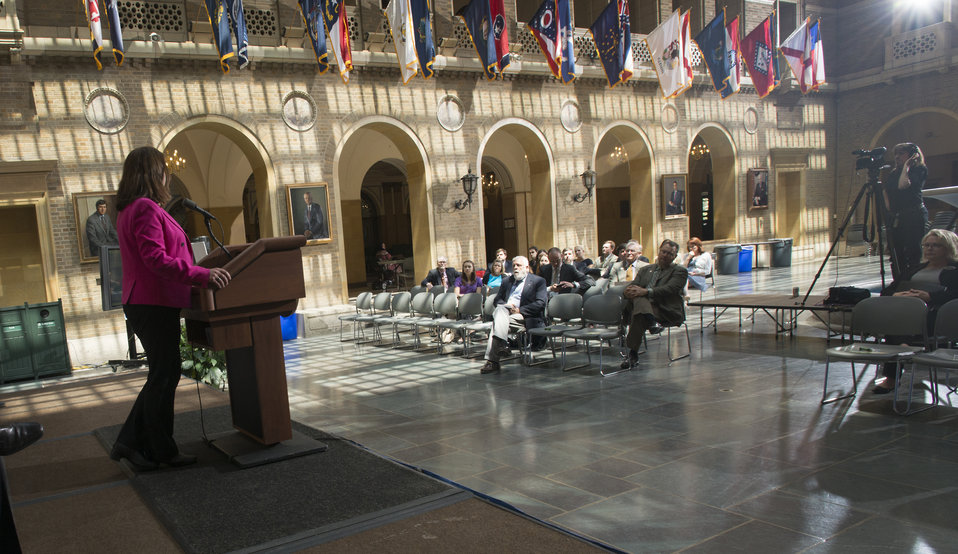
President and CEO of USA Rice Betsy Ward speaks to Ducks Unlimited/USA Rice Federation event at the U.S. Department of Agriculture (USDA) in Washington, D.C. on Tuesday, May 6, 2014.